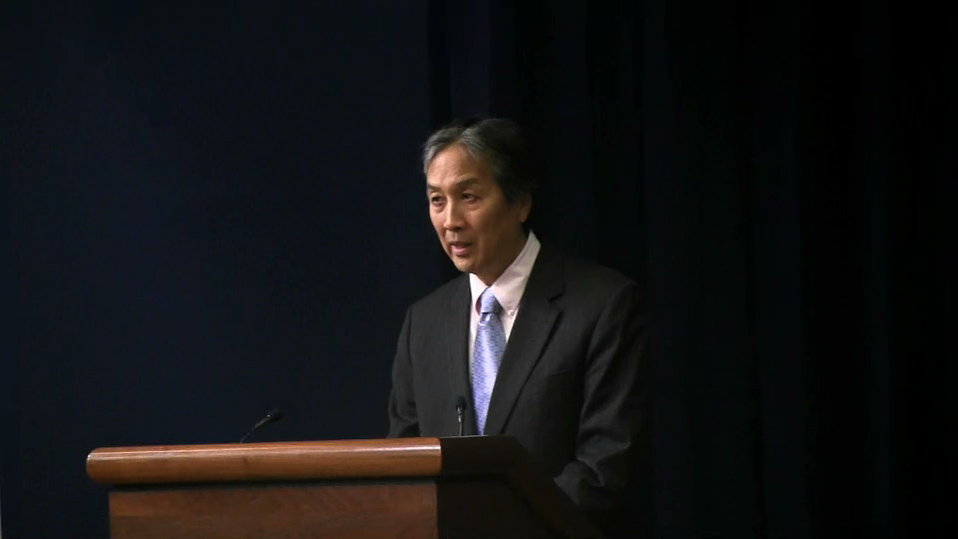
Koh4